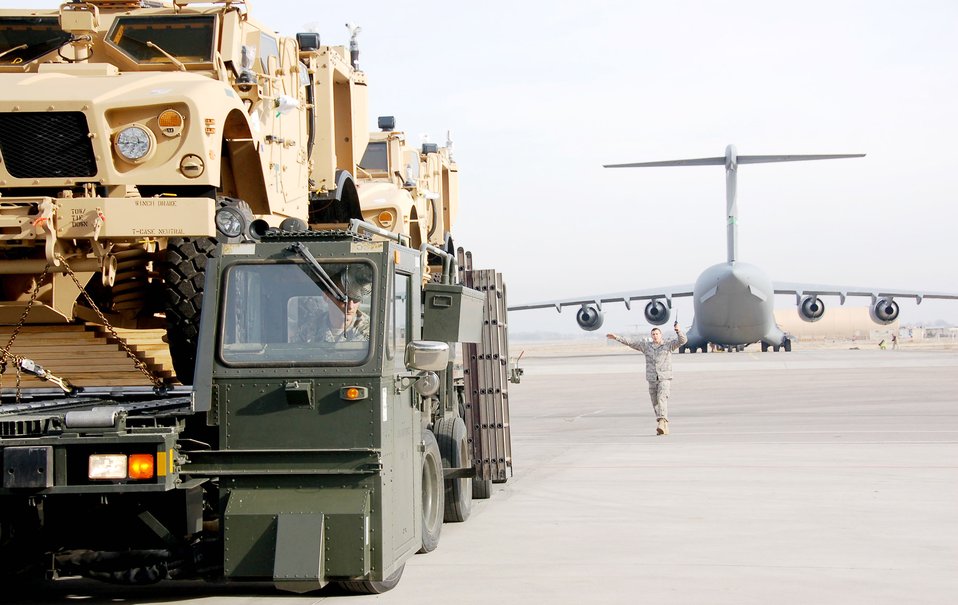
Heading in the right direction

An aerial porter directs a 60-ton K-loader carrying mine-resistant ambush protected, all-terrain vehicles off a commercial aircraft at the Transit Center at Manas, Kyrgyzstan, Jan. 3, 2010. Airmen from the 376th Expeditionary Logistics Readiness Squadron were ready to receive the cargo.